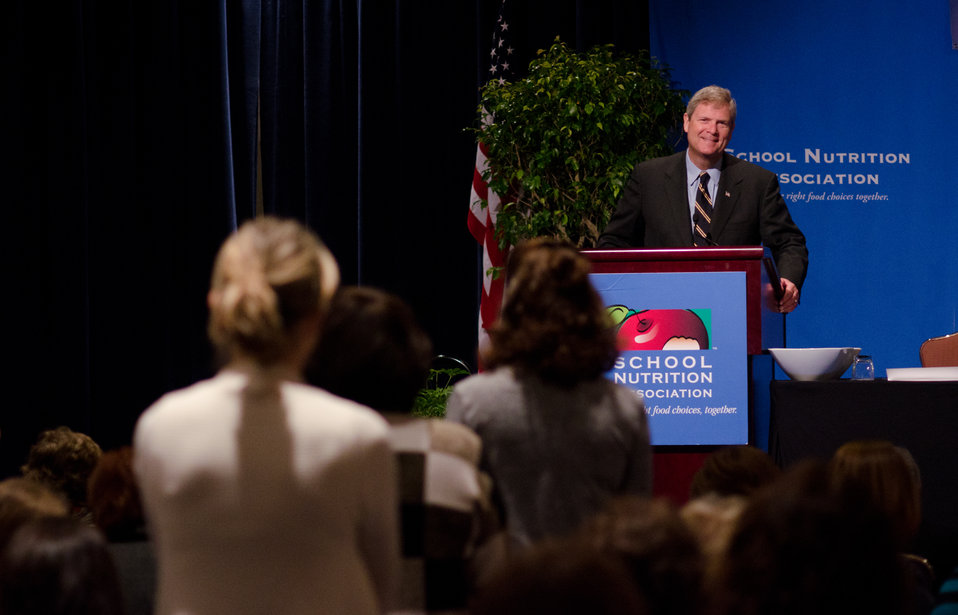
U.S. Department of Agriculture Secretary Tom Vilsack spoke with and took questions during the School Nutrition Association’s closing general session of their 39th annual Legislative Action Conference at the J.W. Marriott Hotel in Washington, D.C., on Wednesday, March 9, 2011. The theme of the Secretary Vilsack’s speech was “The Realities of Implementing New Meal Patterns and Operational Requirements.” Of the many things he spoke about, he also shared with the audience how his motivation came from how personally important it was to him, that his adopted mother made a lunch for him everyday he went to school despite the challenges of her alcoholism and family struggles. He also talked about the Healthy, Hunger-Free Kids Act of 2010 (Public Law 111-296 and how chefs were involved in the development of the USDA’s proposed updated nutrition standards for school meals development.